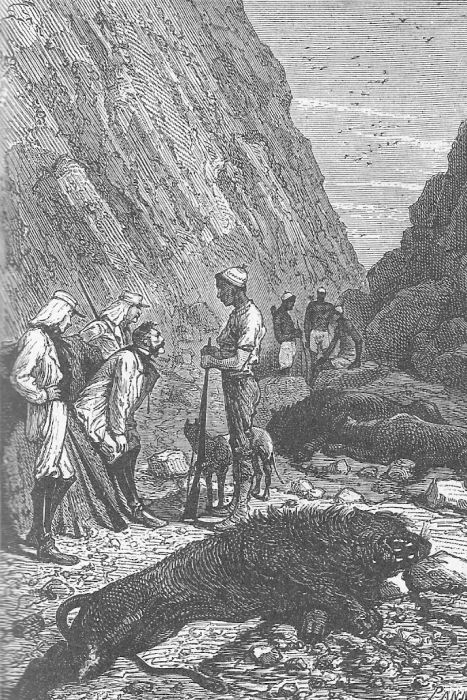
An illustration from Jules Verne's novel 'The Adventures of Three Englishmen and Three Russians in South Africa' (1870) drawn by Jules Férat. Polski: Ilustracja powieści Juliusza Verne'a 'Przygody trzech Rosjan i trzech Anglików w południowej Afryce' (1870) autorstwa Julesa Férata. Français : Jules Verne: 'Aventures de trois russes et de trois anglais dans l’Afrique australe' (1870), dessins par Jules Férat.